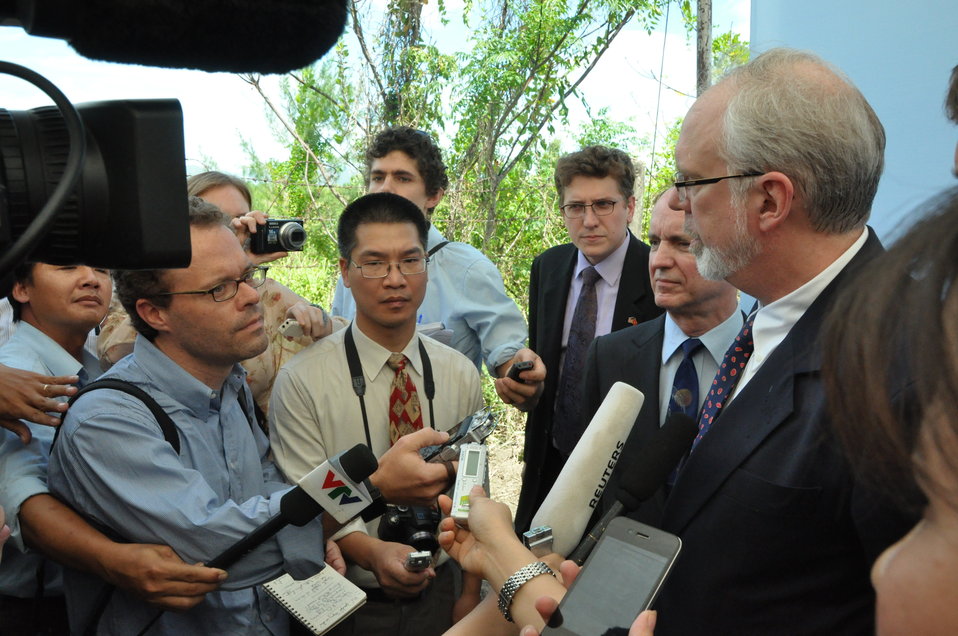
U.S. Ambassador David B. Shear meets the press at the Environmental Remediation of Dioxin Contamination at Danang Airport Project Launch

Danang, August 9, 2012